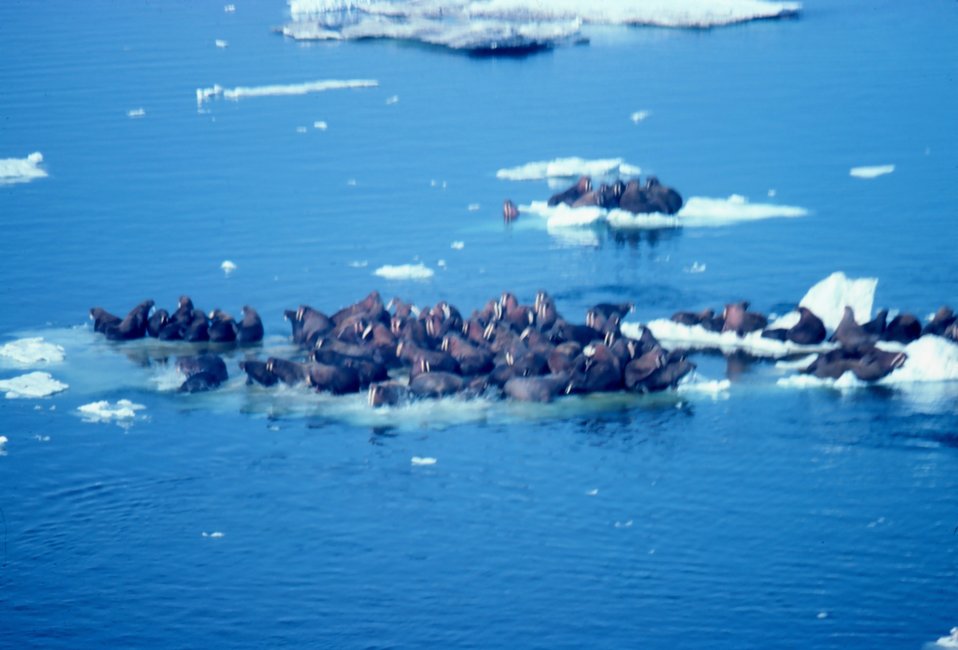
Walrus - Odobenus rosmarus divergens - hauled out on Bering Sea ice.